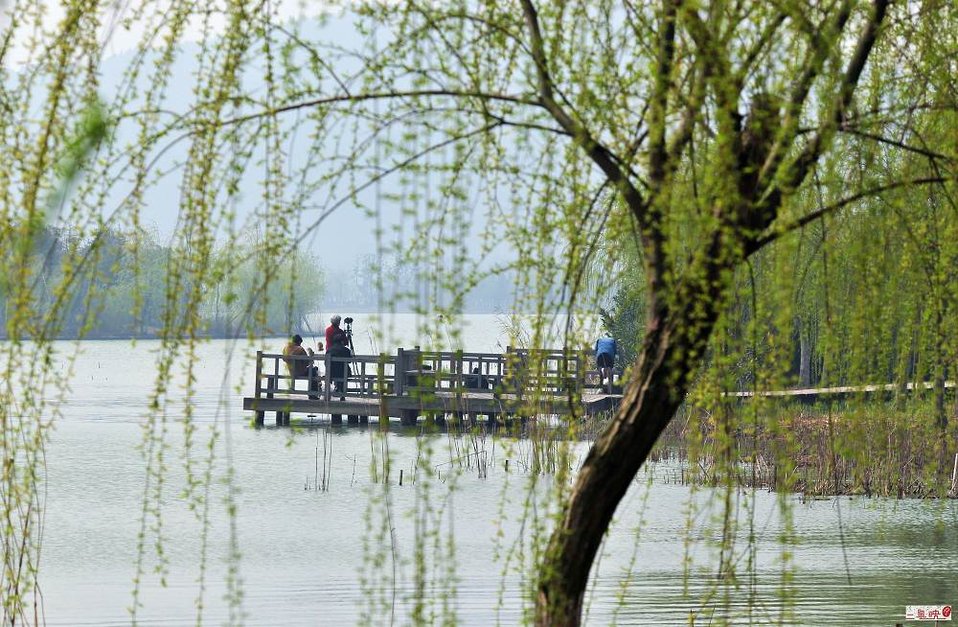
Uploaded by request of Ju Chen

Taken at Lake Tai, Wuxi.

It is a beautiful and large lake park for people to enjoy. However, In May 2007, the lake was suffered from algae bloom, which affected over 2 million people without drinking water. Good living comes with clean environment. One who loves living, loves environment.